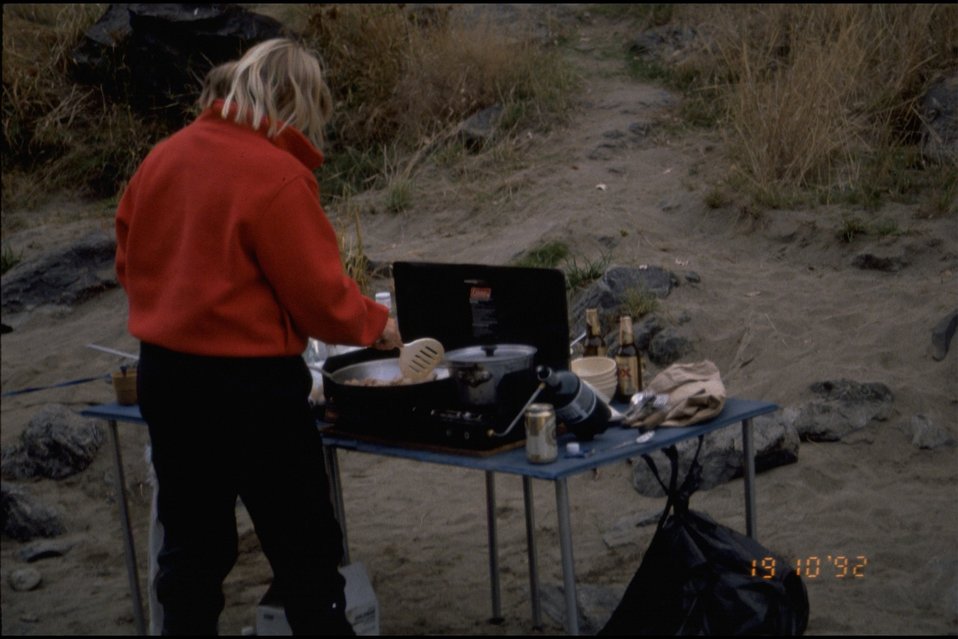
Rogue River - Wild section. Cooking at river camp.